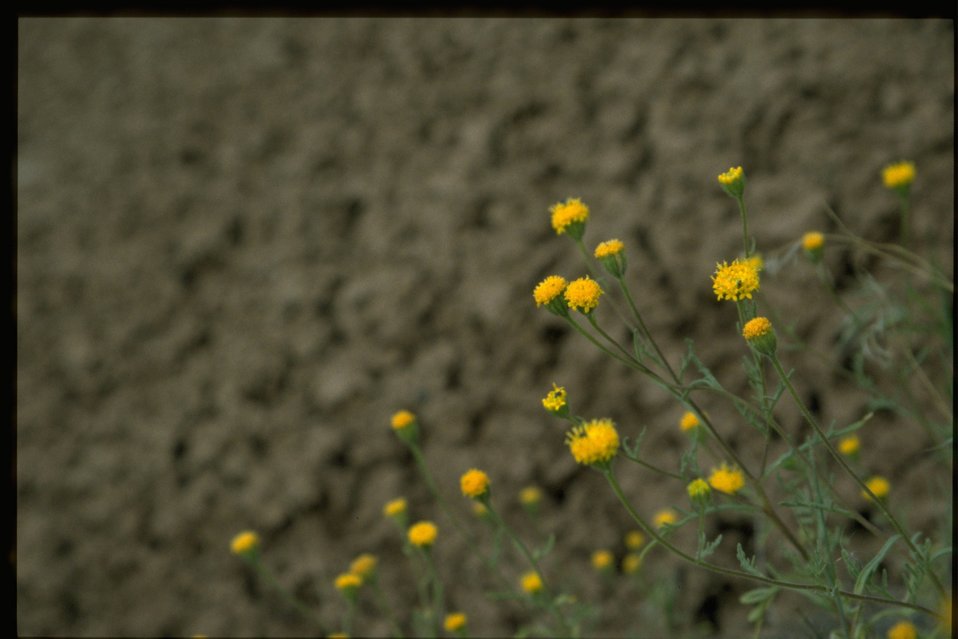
Farshot of John Day's pincushion (Chaenactis nevii).